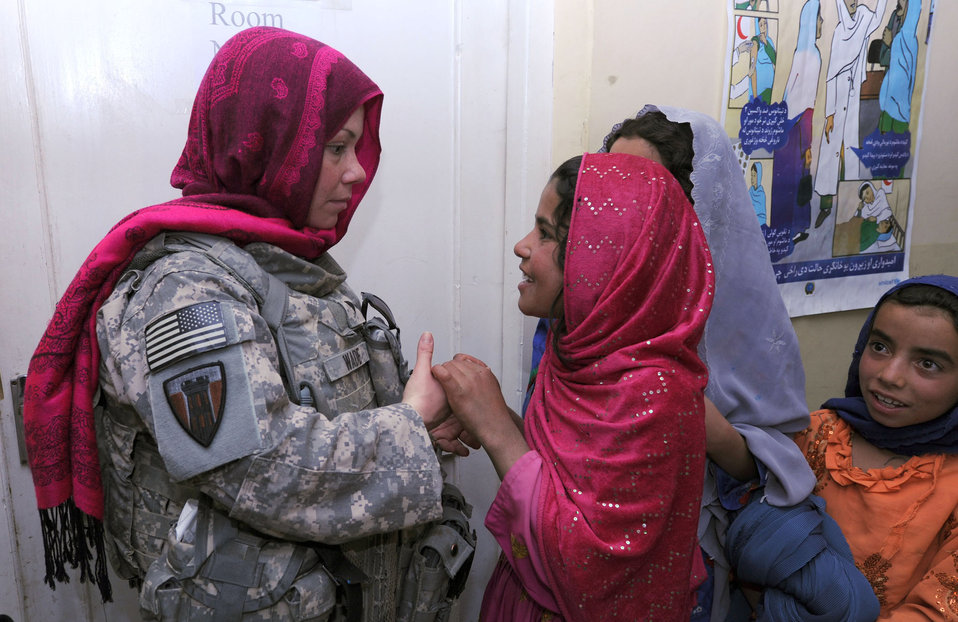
Shura gives voice to women's role in Paktika

Army Spc. Courtney Wade talks with a young Afghan child April 25, 2011, in Urgun, Afghanistan, during the first women's shura. Specialist Wade is a combat medic assigned to the 176th Engineer Brigade.